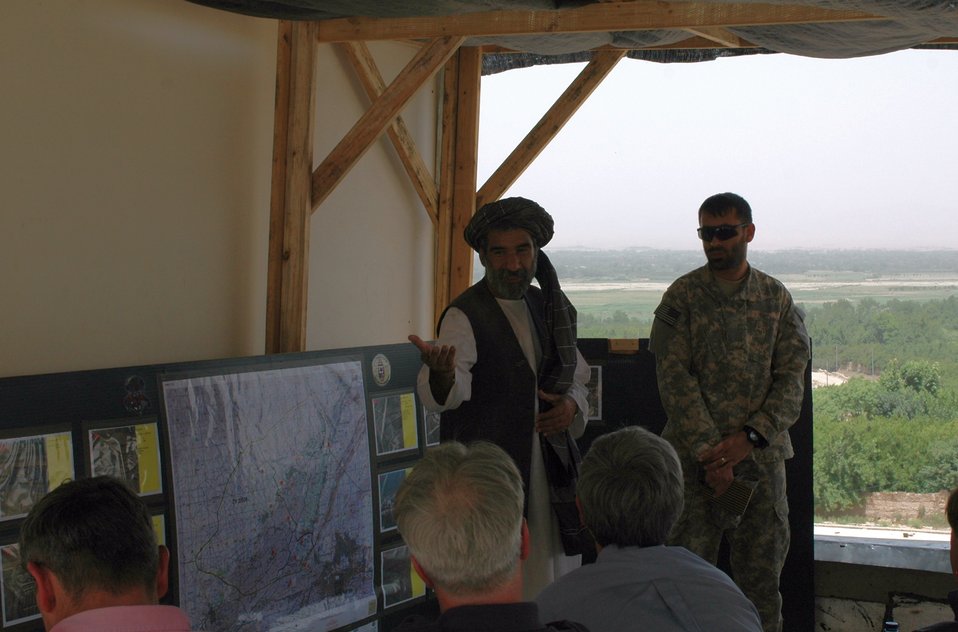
CODEL Berman